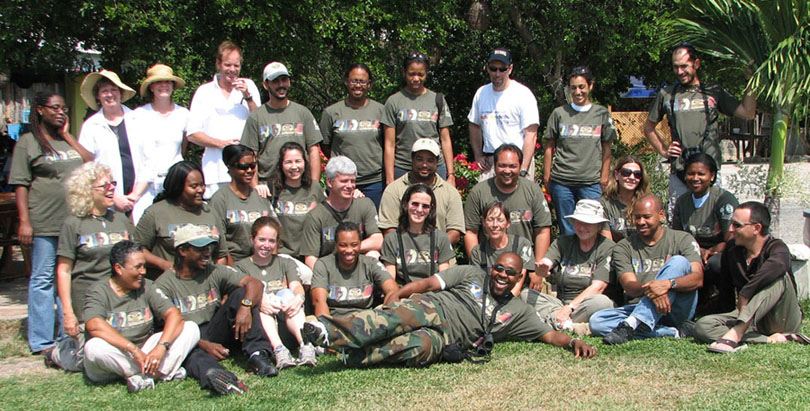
Participants at the SCSCB Waterbird Monitoring Training Workshop, February 21-25, 2010, Negril, Jamaica Credit SCSCB

Participants at the SCSCB Waterbird Monitoring Training Workshop, February 21-25, 2010, Negril, Jamaica.